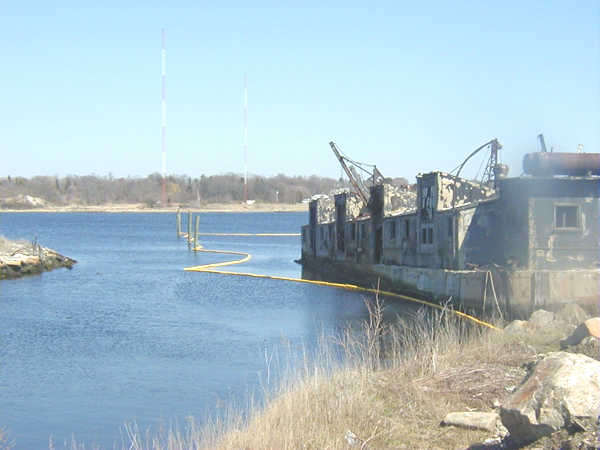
Spring 2002, oil boom to protect the harbor during vessel demolition